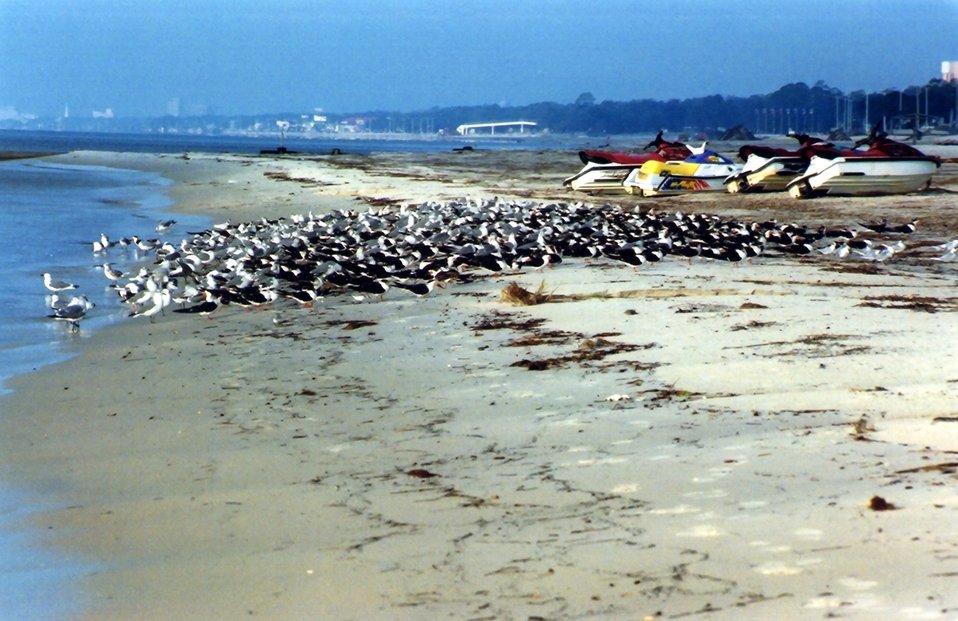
A large mixed-species flock of shore birds on a Gulf of Mexico beach.